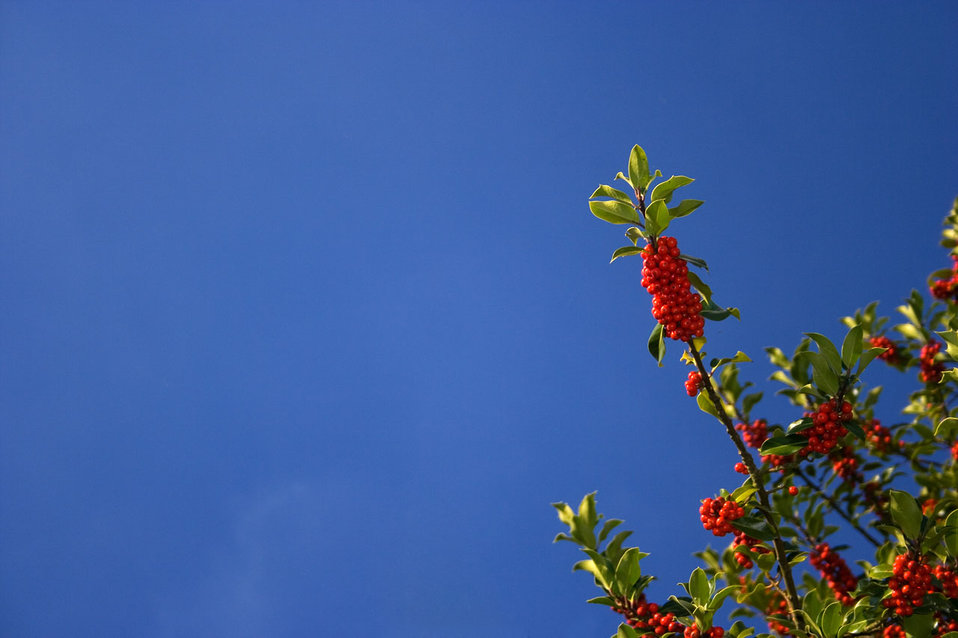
A branch of holly against the blue sky.